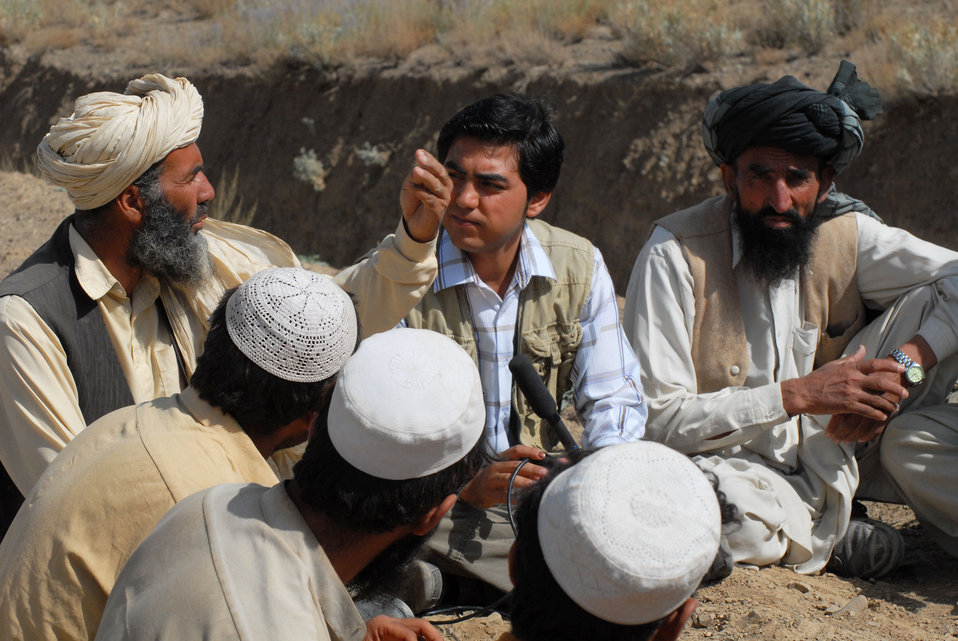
'On the Road' in Paktya Province